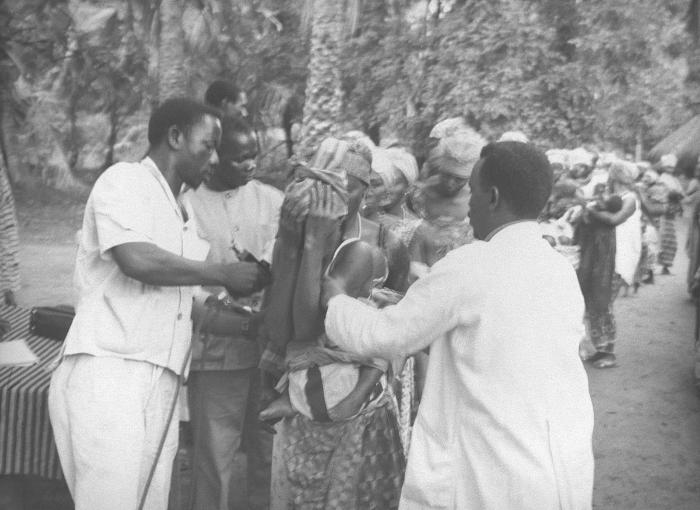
This woman was receiving her smallpox vaccination during Nigeria's 1968 Smallpox Eradication program.